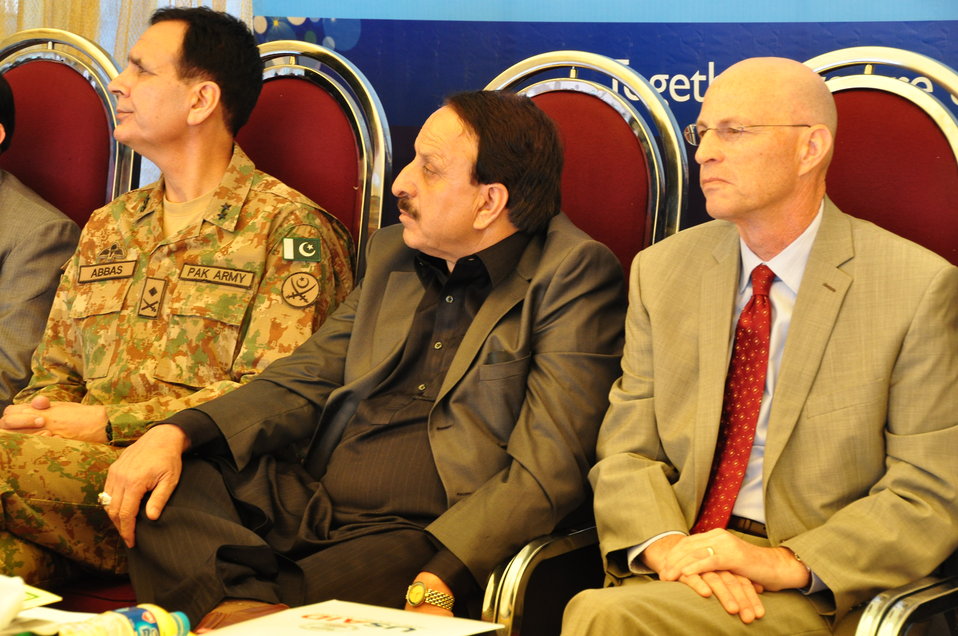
Dhirkot Reconstructed Hospital Inauguration Pakistan Reconstruction Program 11